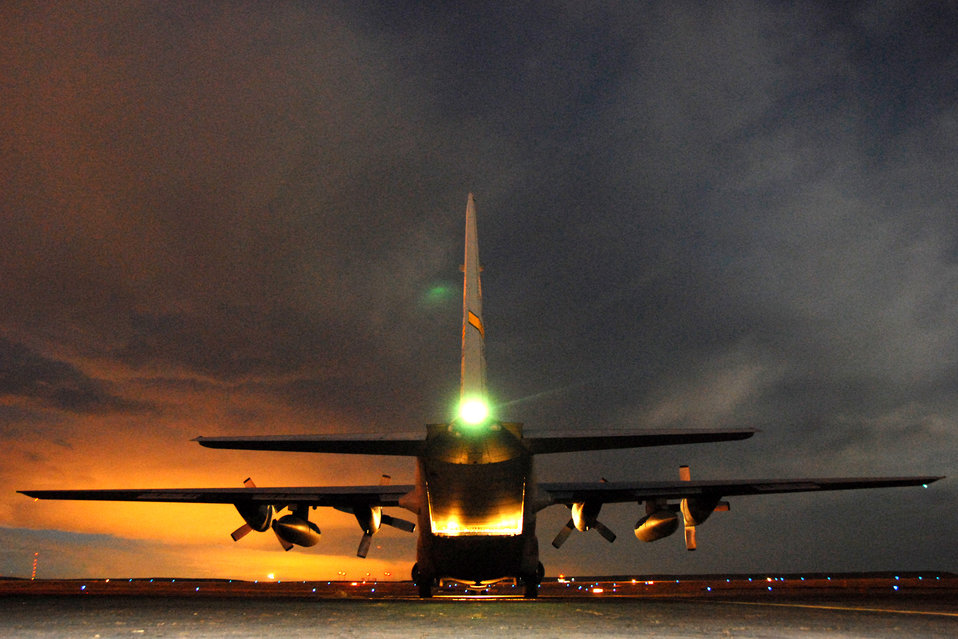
Emergency feeding mission

A Wyoming National Guard C-130 Hercules from Cheyenne prepares to depart Jan. 3 from Pueblo, Colo., after being loaded with six one-ton bales of hay. The hay is intended for cattle stranded by a winter storm in southeastern Colorado. The aircraft was loaded in the evening after the last drop of the first day so it would be ready to go early on the second day. It would land again at Pueblo for more missions and drops as time and weather permitted.